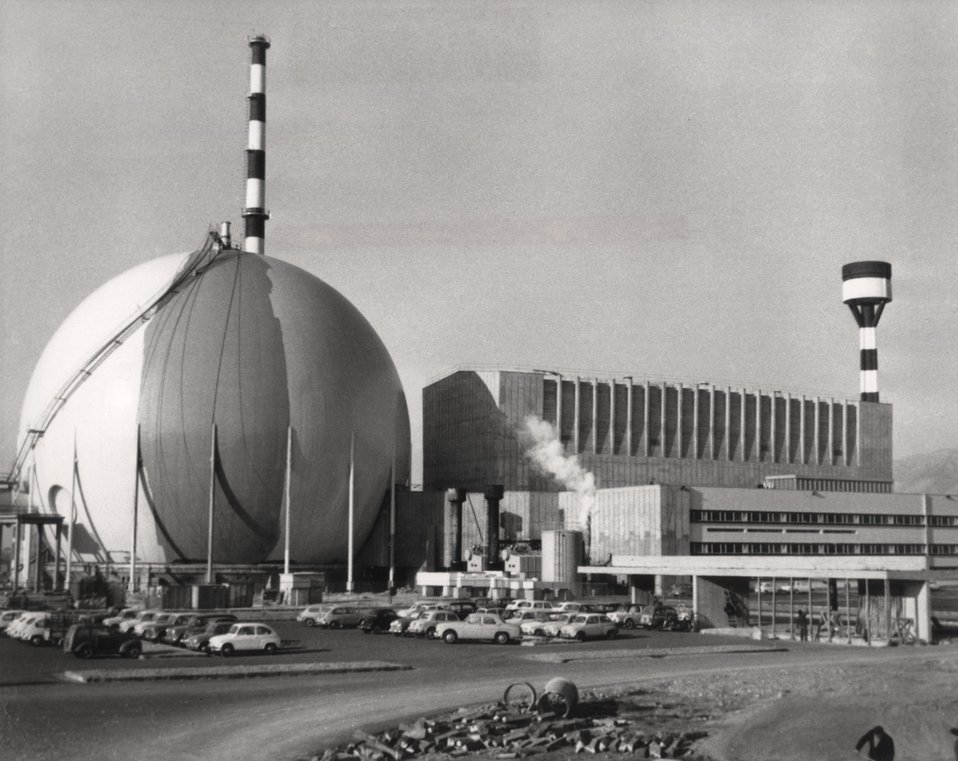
Societa Elettronucleare Nazionale of Italy will produce 150,000 kilowatts of electric power from their forced circulation, dual cycle boiling water reactor plant. c. 1963